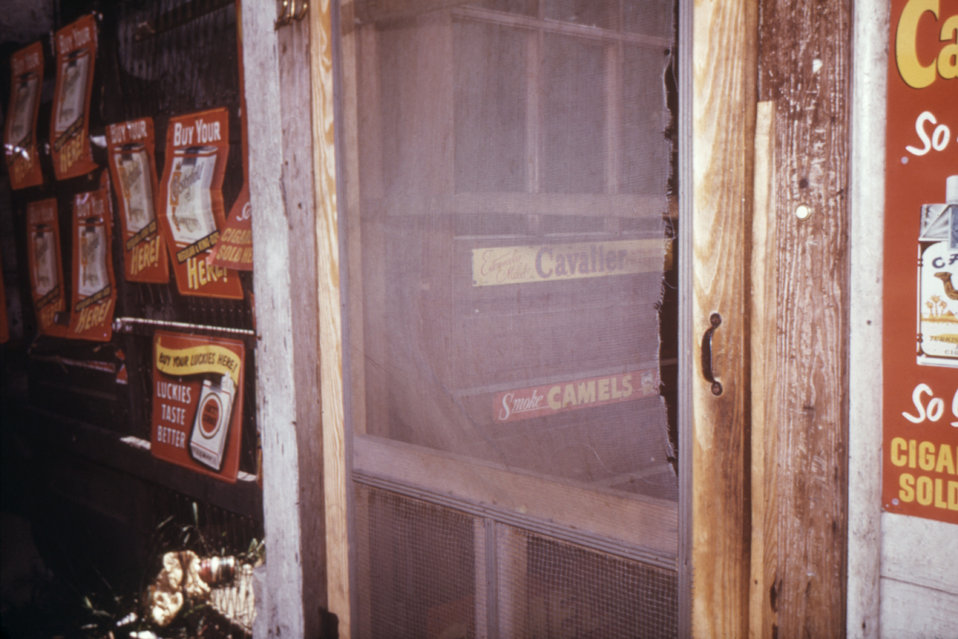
This was a broken grocery store food larder screen door in a migrant labor camp that could have lead to an insect infestation.